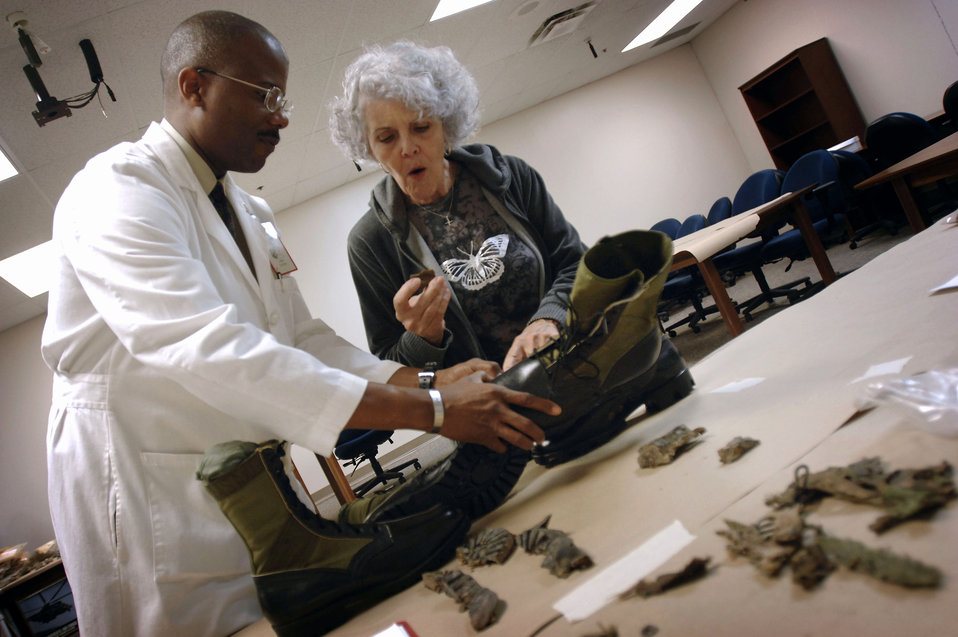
Brooks lab offers last-ditch effort to identify remains

John Goines III shows Sallie Stratton the remains recovered from the crash site of her husband, Lt. Col. Charles W. Stratton, whose bomber went down Jan. 3, 1971, over Laos Nov. 4 at Brooks City-Base, Texas. The lab, at Brooks City-Base, Texas, helps the Joint POW/MIA Accounting Command, based in Hawaii, identify servicemembers still missing from past wars. Mr. Goines is chief of the Life Sciences Equipment Laboratory.